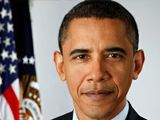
Obama 160x120